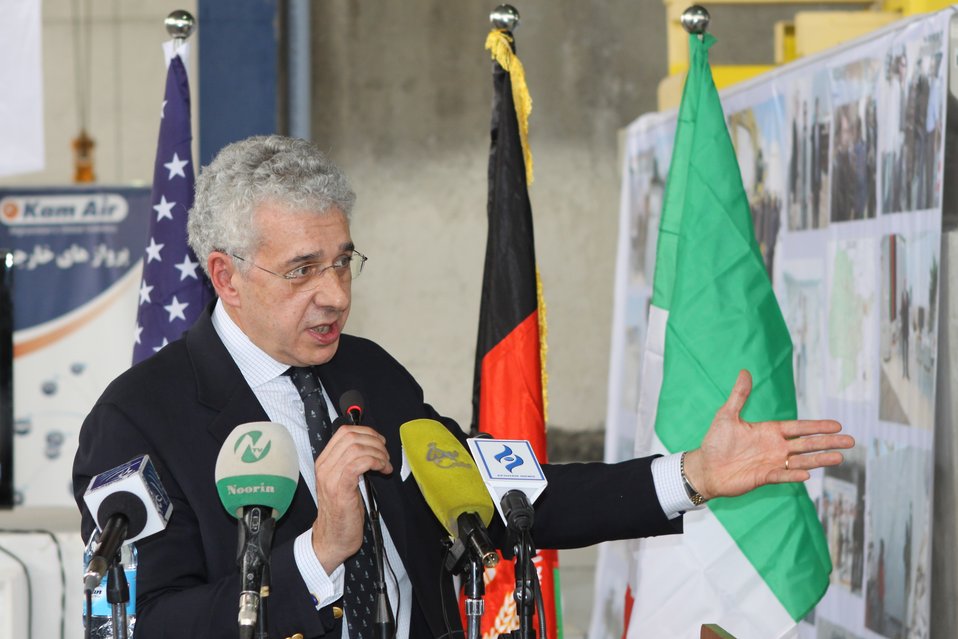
100525 Hirat Marble Conference 242